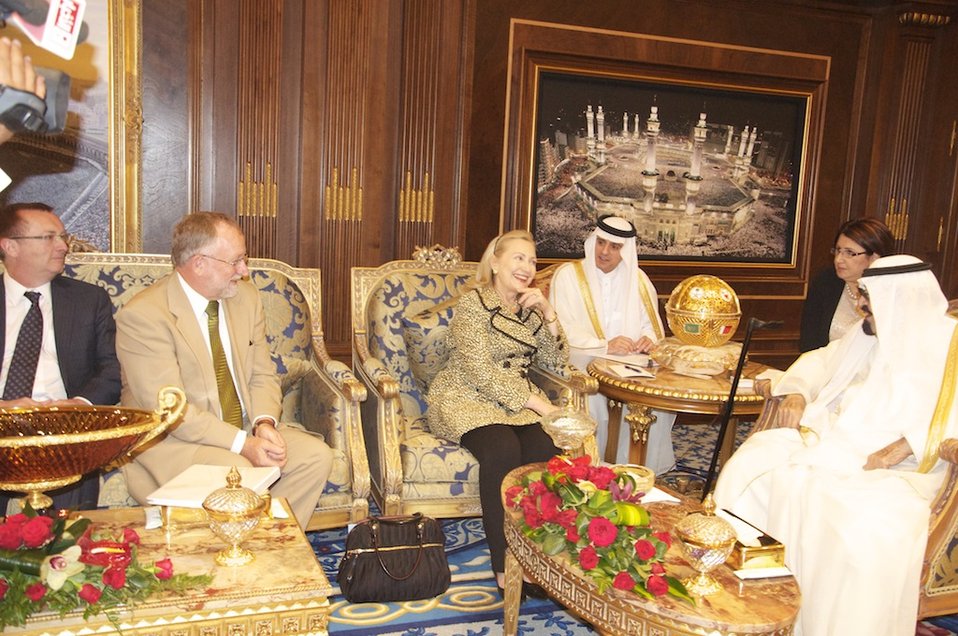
Assistant Secretary Feltman, Ambassador Smith, and Secretary Clinton Meet With King Abdullah

Assistant Secretary of State for Near Eastern Affairs Jeffrey Feltman, left; U.S. Ambassador to the Kingdom of Saudi Arabia James Smith, second from left; U.S. Secretary of State Hillary Rodham Clinton, third from left, meet with the Custodian of the Two Holy Mosques, King Abdullah of Saudi Arabia, in Riyadh on March 30, 2012.